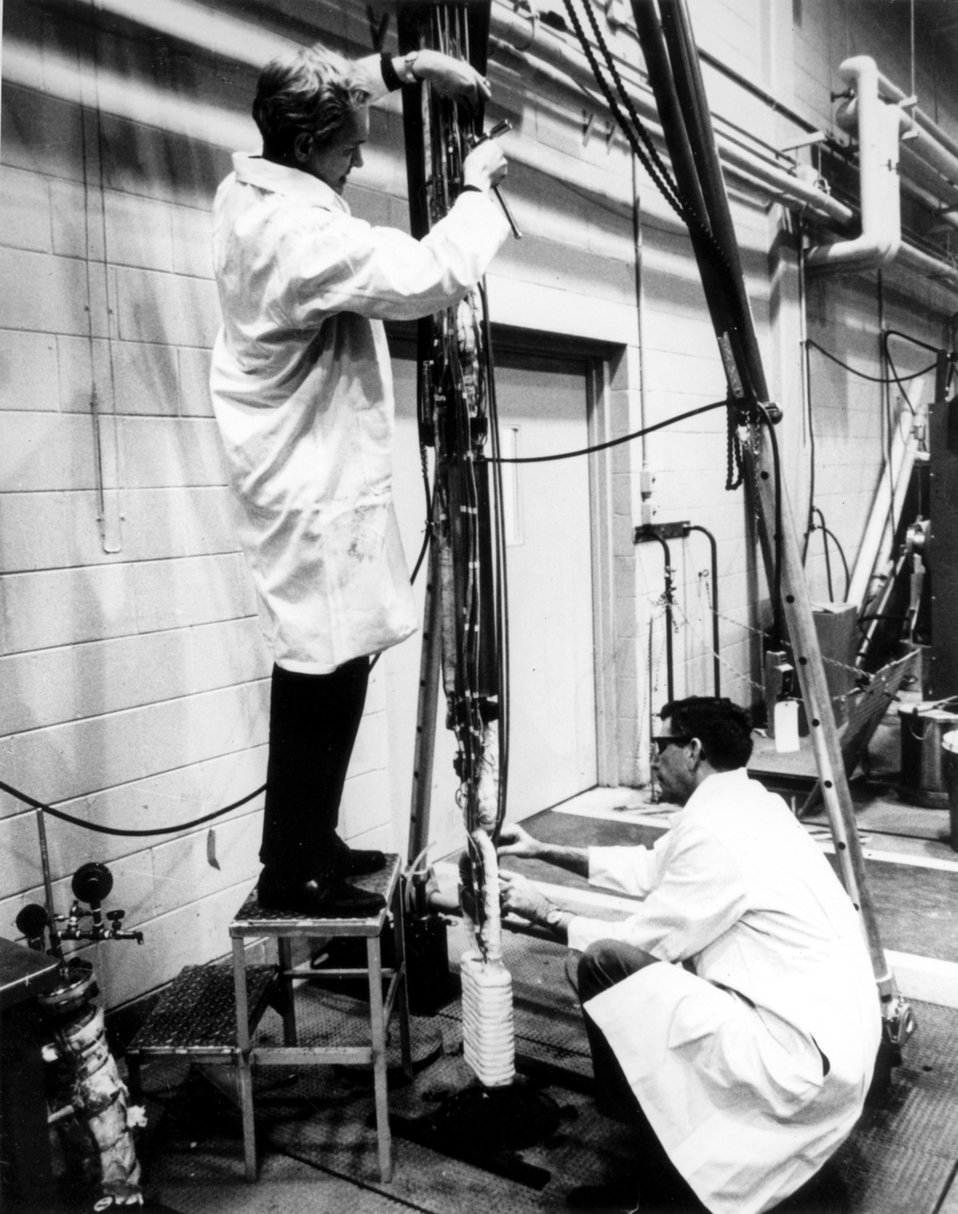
The Mark II Packaged Sodium Loop under construction at Argonne.
c.1970